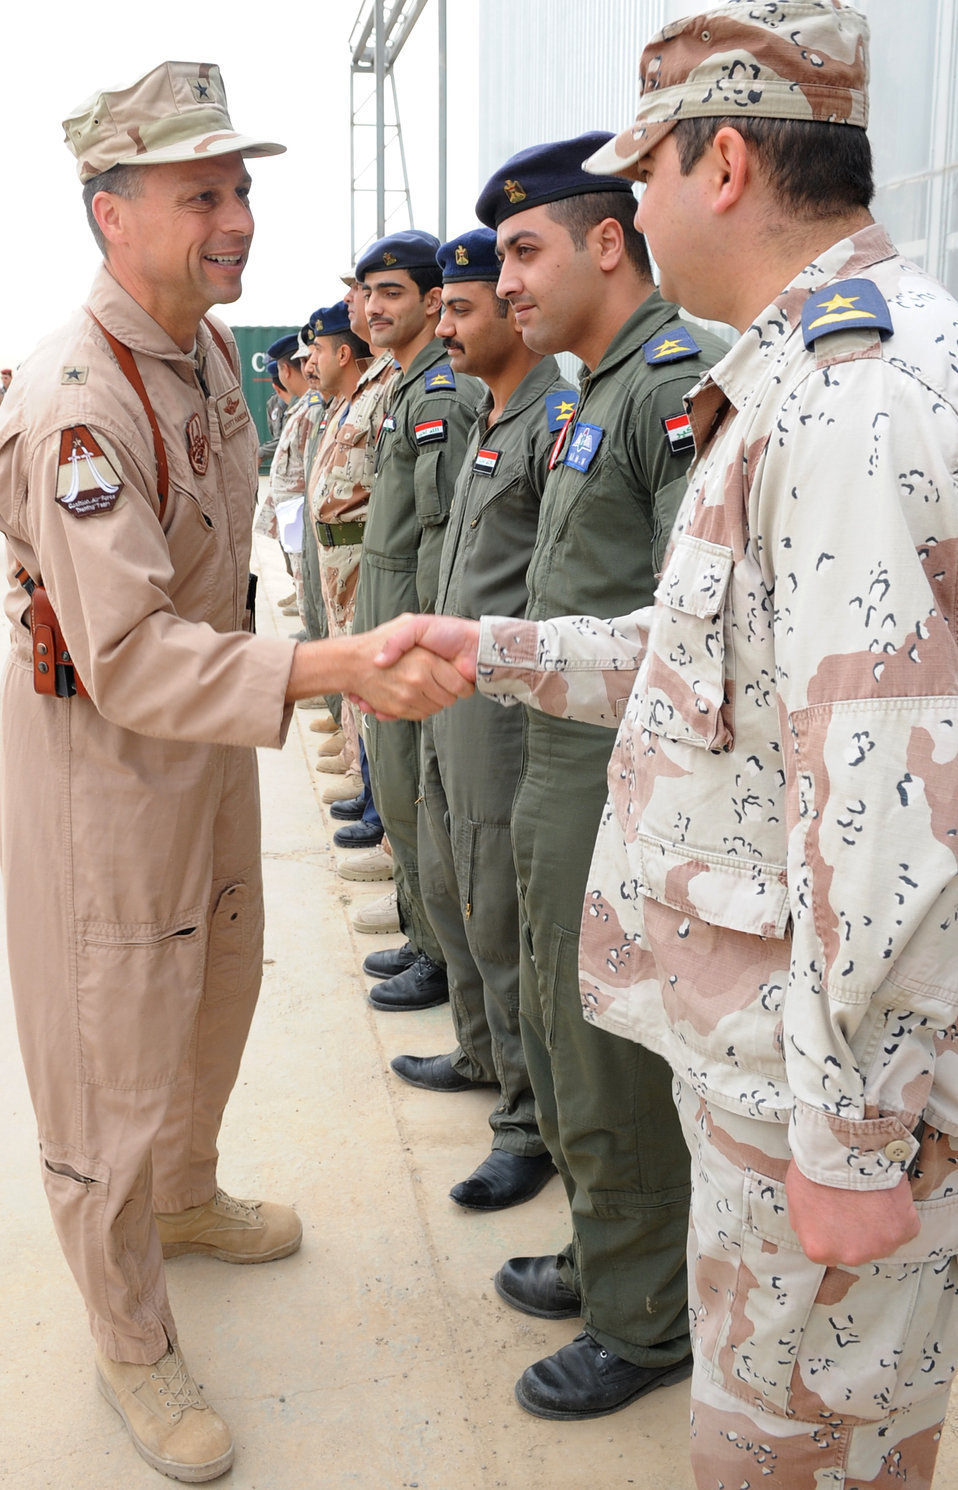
Hangar transfer

Brig. Gen. Scott Hanson, 321st Air Expeditionary Wing commander, greets members of the Iraq Training and Advisory Mission-U.S. Air Force and the Iraqi air force following the formal transfer to the Iraqis of a newly restored hangar at Kirkuk Regional Air Base, Iraq on March 10, 2010.